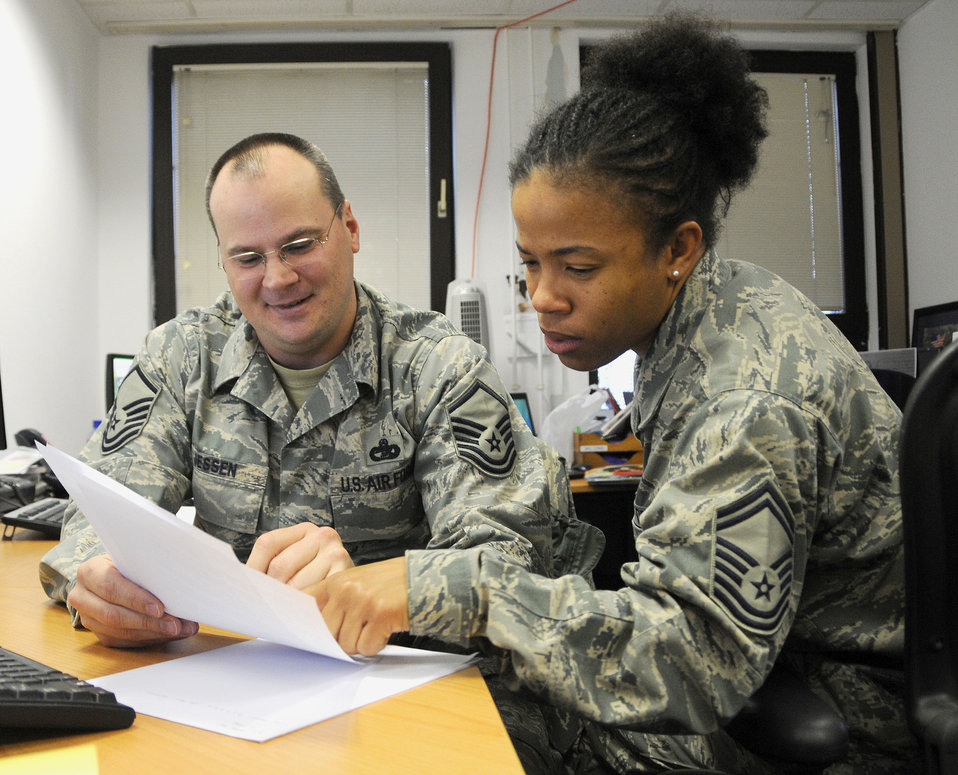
Exercise Objective Lens 2010

Master Sgt. Scott Jessen, Air Forces Africa air transportation manager, and Senior Master Sgt. Demetrice Webb, AFAFRICA material manager, review logistics and bed-down of forces procedures Feb. 22, 2010, following Exercise Objective Lens 2010 which ran from Feb. 8 to 21. The exercise tested the unit's ability to plan for and execute a short-notice non-combatant evacuation operation in Africa.